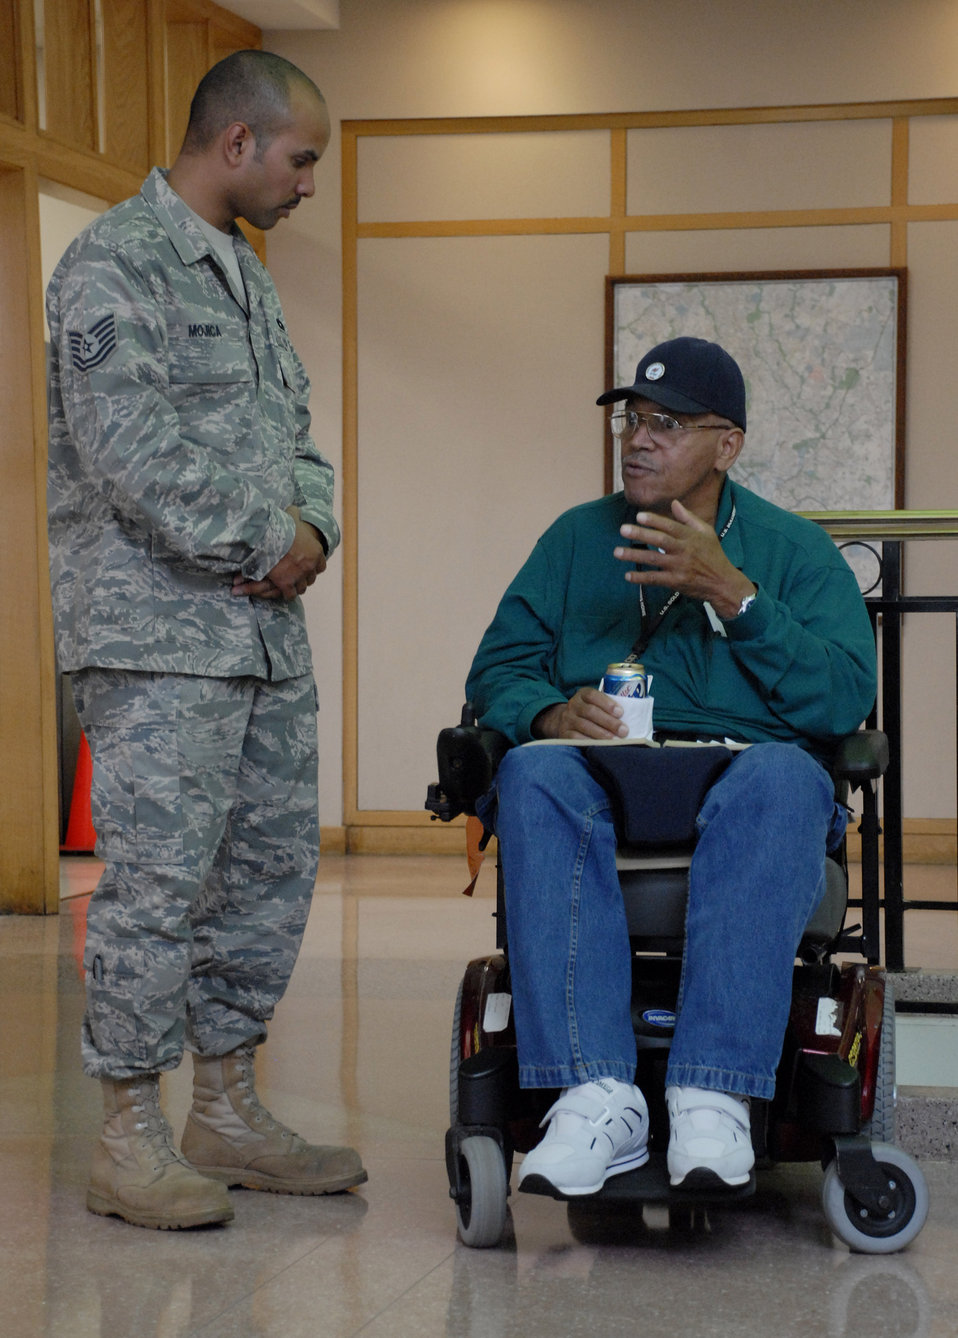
Joint Enlisted Council lift spirits at veterans home

Tech. Sgt. Ruben Mojica chats with 81-year-old retired Tech Sgt. James Hart Oct. 16, 2009, during a visit to the U.S. Soldier's and Airmen's Home in Washington, D.C. Sergeant Mojica made the visit with the National Capital Region Joint Enlisted Council.